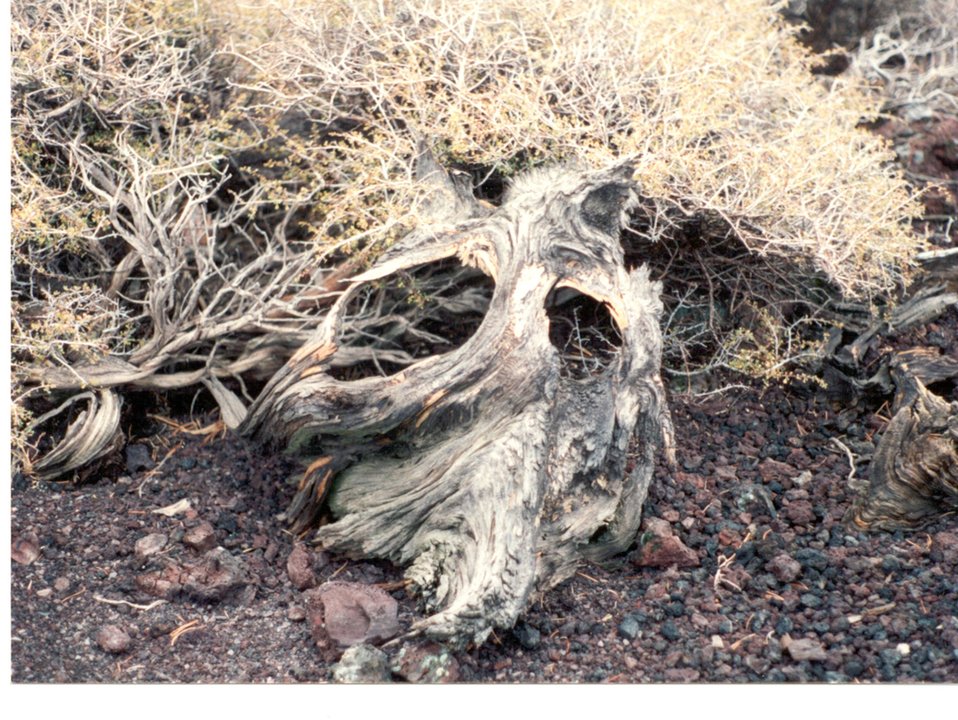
Top of Big Cinder Butte Craters of the Moon Shoshone Field Office USRD Upper Snake River District